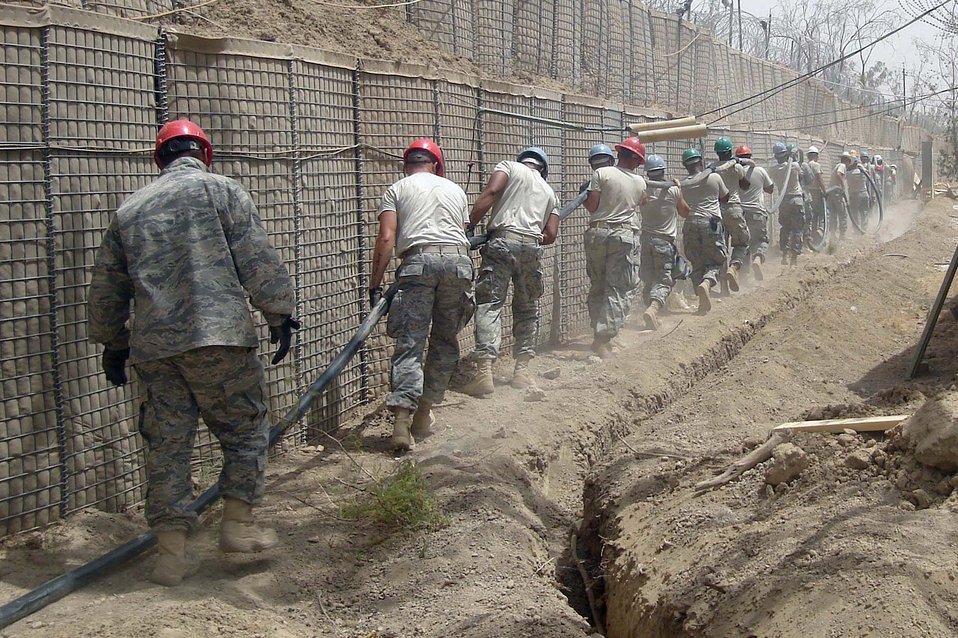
Keep pulling!

Airmen from the 732nd Expeditionary Civil Engineer Squadron Construction Team 6 pull cable to connect Southwest Asia huts and latrines with generator power at Combined Operation Location Cruz-Morris, Iraq.